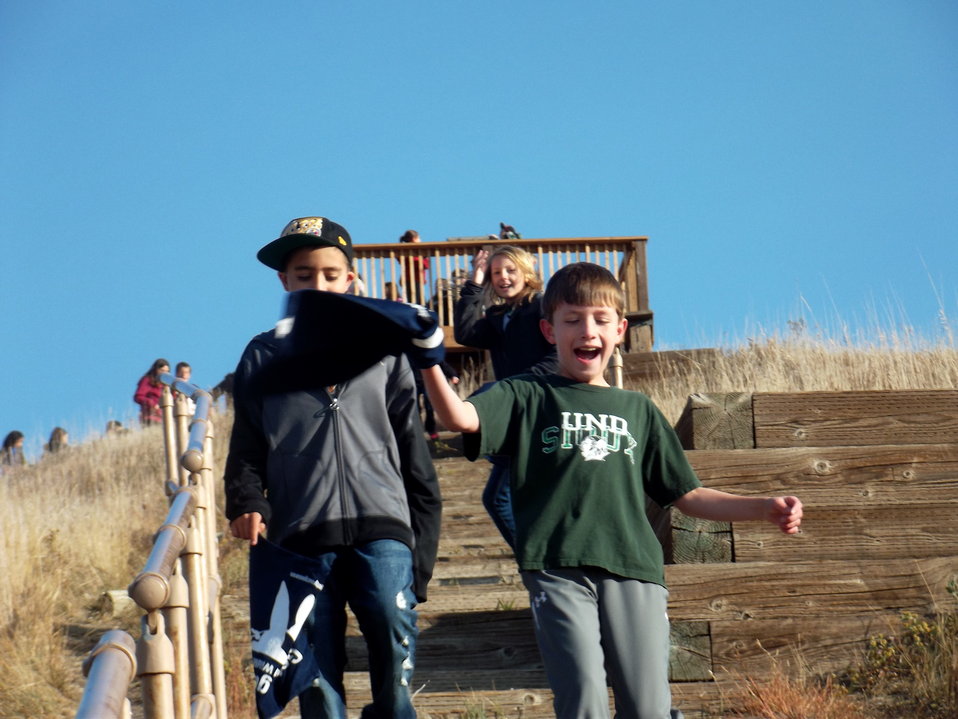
Get Your Goose On!

Photo taken at Sullys Hill National Game Preserve.